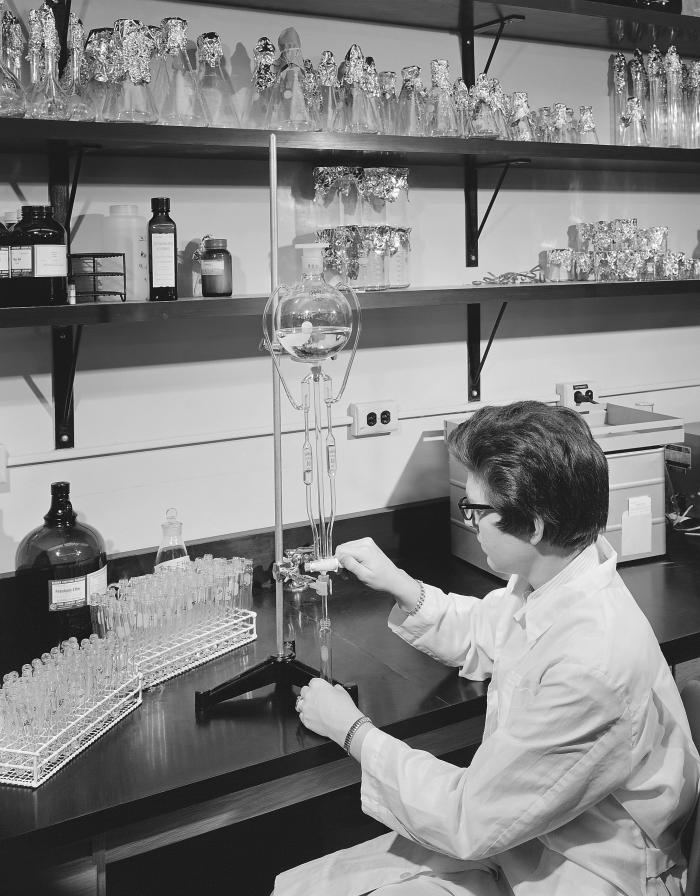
This historic 1966 image depicted a laboratory technician using a manual method for conducting a cholesterol determination.